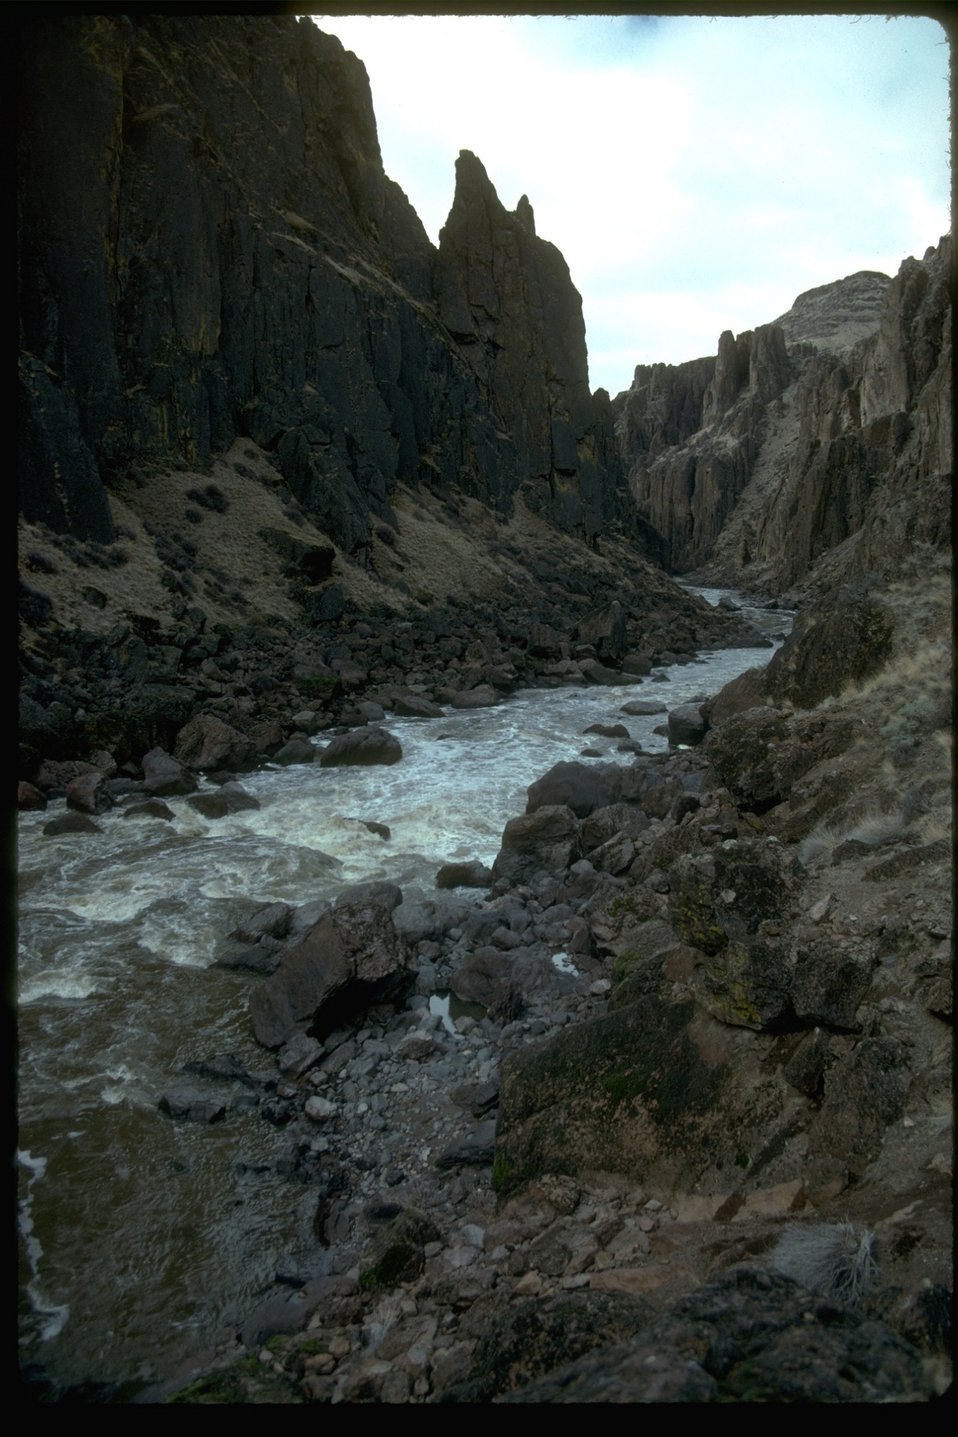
The Widow Maker Rapids on the Owyhee Wild River in the Owyhee Canyon. OR 3-195